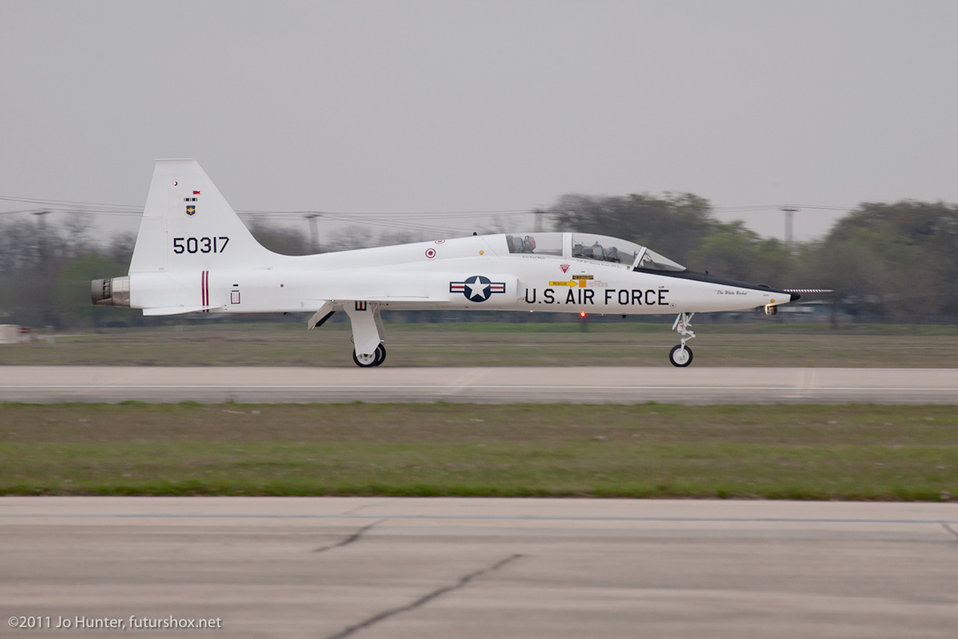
T-38

A T-38 Talon taxis March 17, 2011, at Randolph Air Force Base, Texas. This T-38 has been painted with a special commemorative color scheme, giving the plane an appearance similar to its original 1961 look.